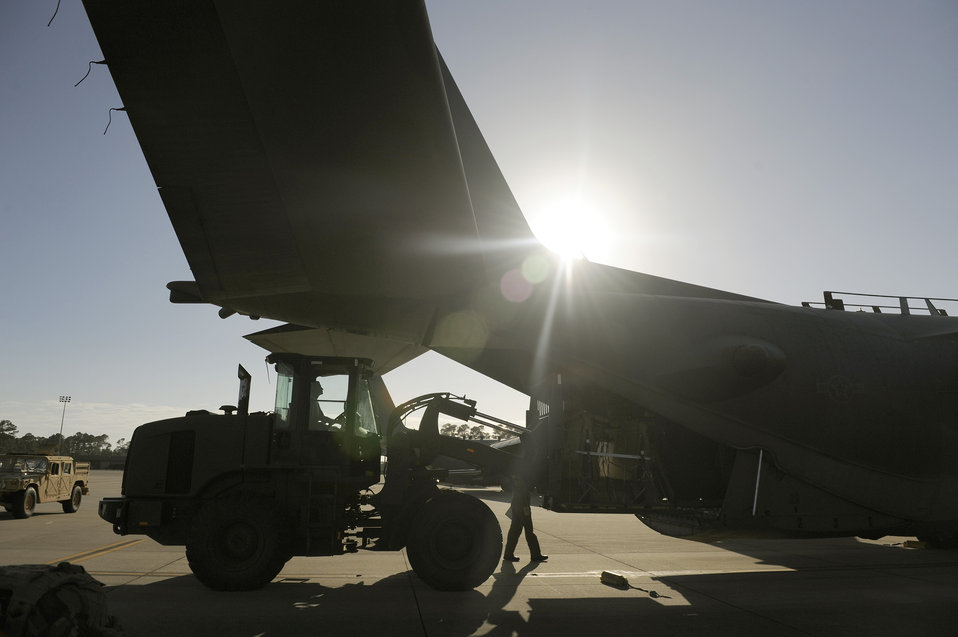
Joint training

A loadmaster assigned to the 15th Special Operations Squadron uses a forklift to load an aircraft March 3, 2011, at Hurlburt Field, Fla., in support of Emerald Warrior. Emerald Warrior is an annual two-week joint/combined tactical exercise sponsored by U.S. Special Operations Command officials to provide realistic training opportunities to conventional and special-operations forces.